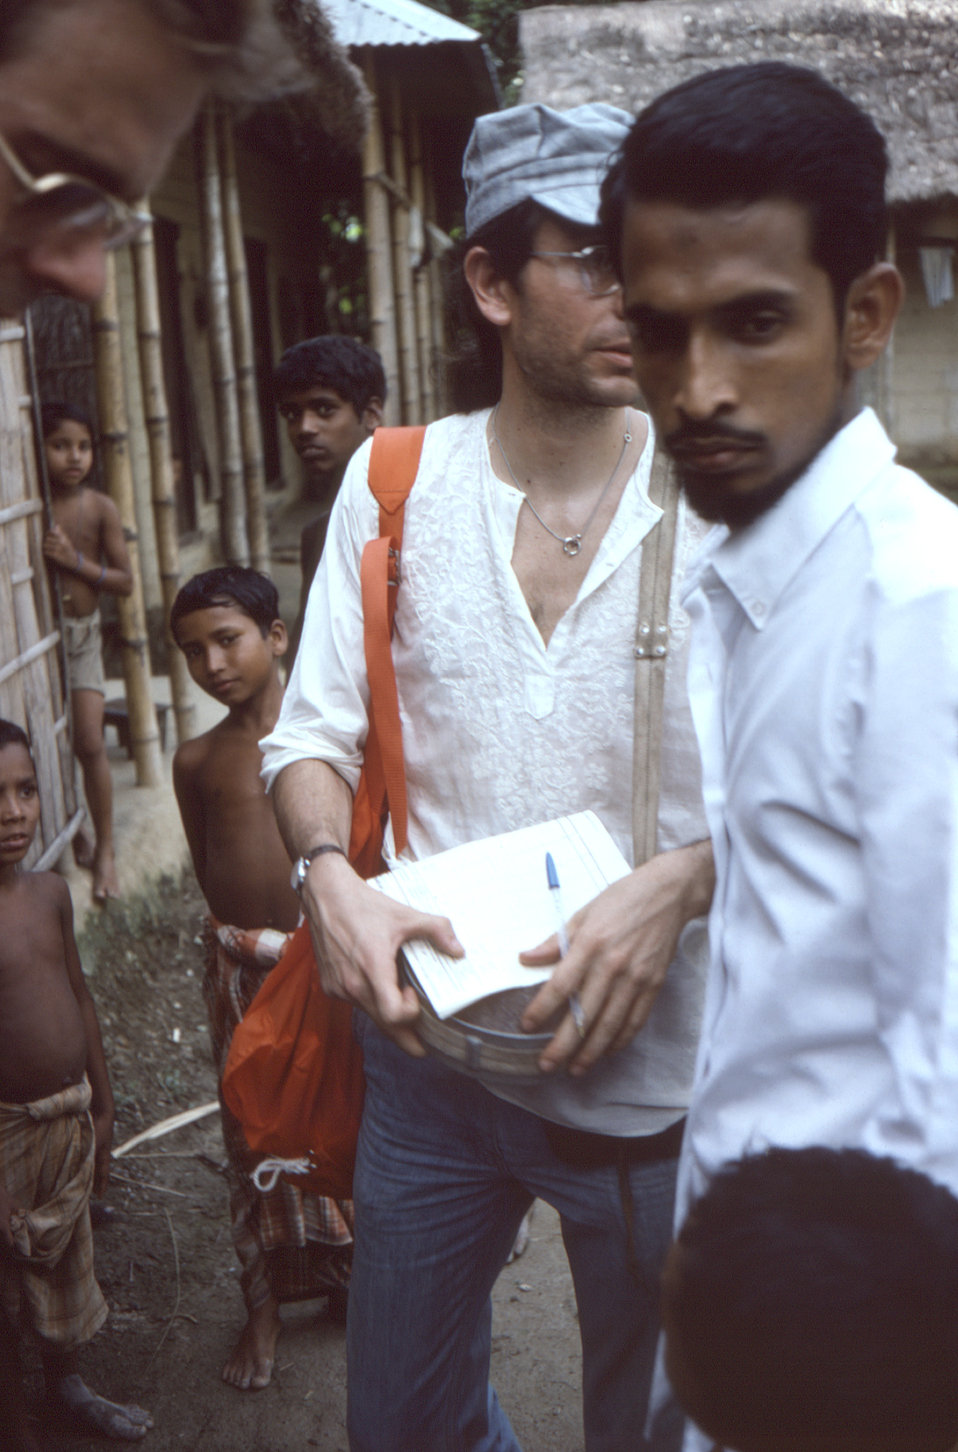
Still in the Sylet District of north-eastern Bangladesh, was Dr. Michael Schwartz, along with his translator as they were in the process of conducting a national search for smallpox.